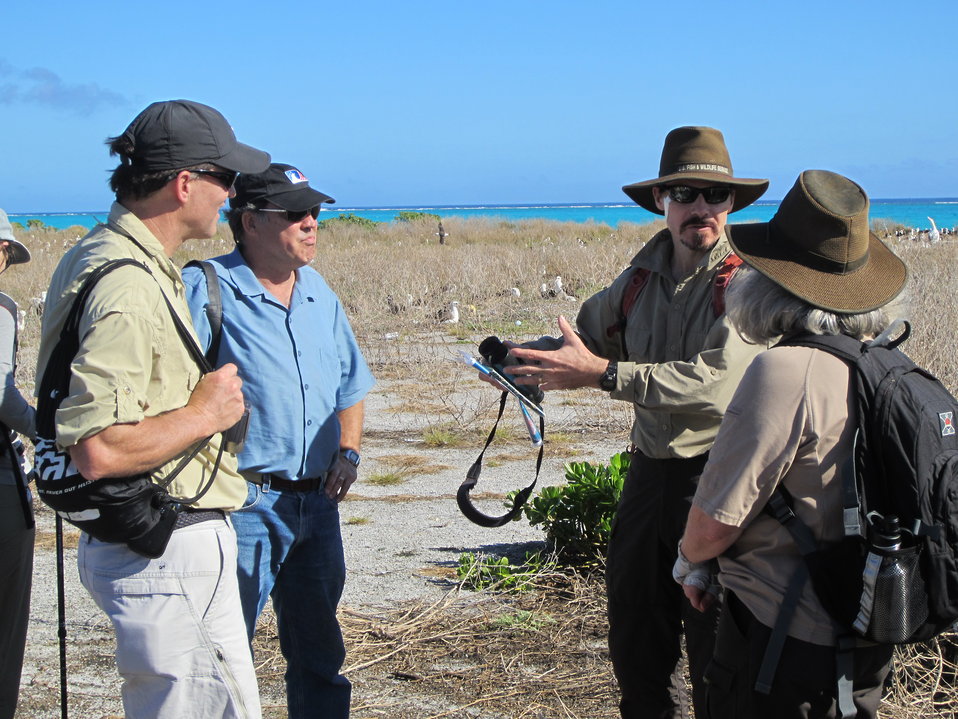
USFWS employees with Director Dan Ashe on Laysan Duck area on East Island

Director Dan Ashe learns about planning restoration efforts from USFWS employees in for the Laysan Duck area of Hawaii's East Island.